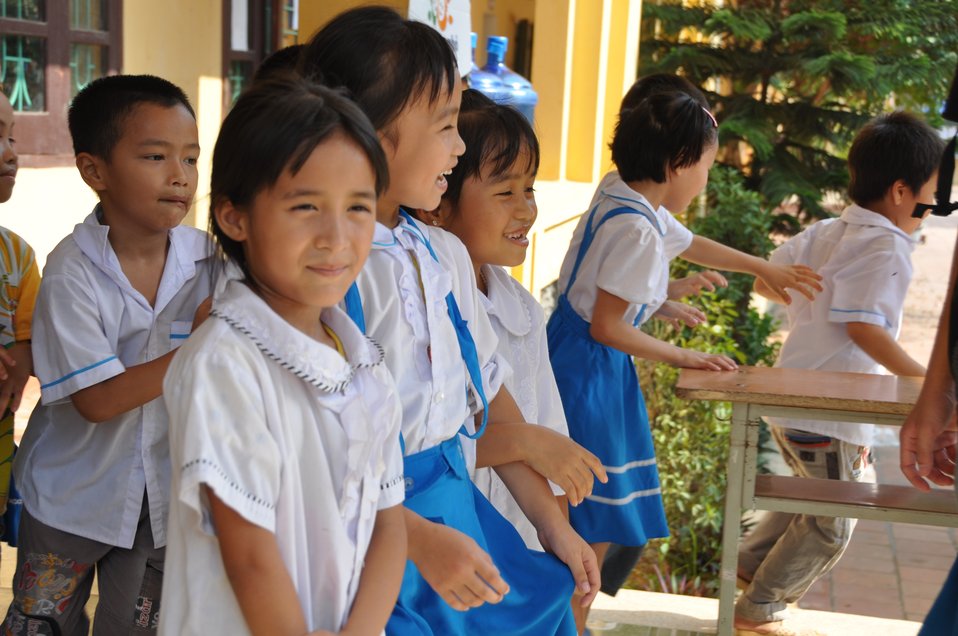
USAID supports deworming education and medication distribution in Bac Giang Province

May 20, 2013